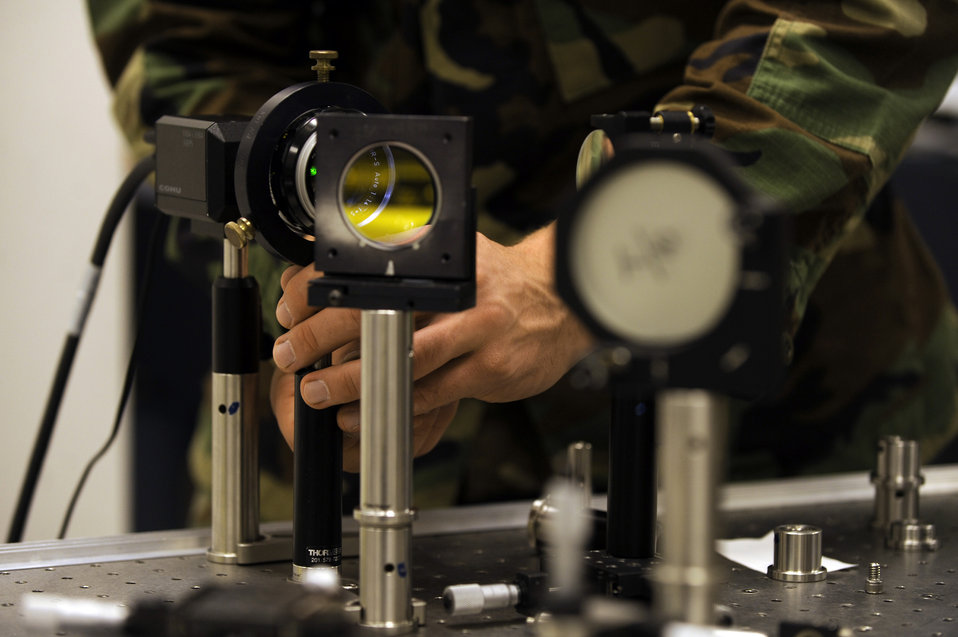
Academy researcher develops satellite imaging technology

U.S. Air Force Academy Cadet Will Holmes adjusts an optical mount as he conducts holographic adaptics optics research Jan. 22 at the Academy in Colorado. Cadet Holmes is a senior at the Academy.